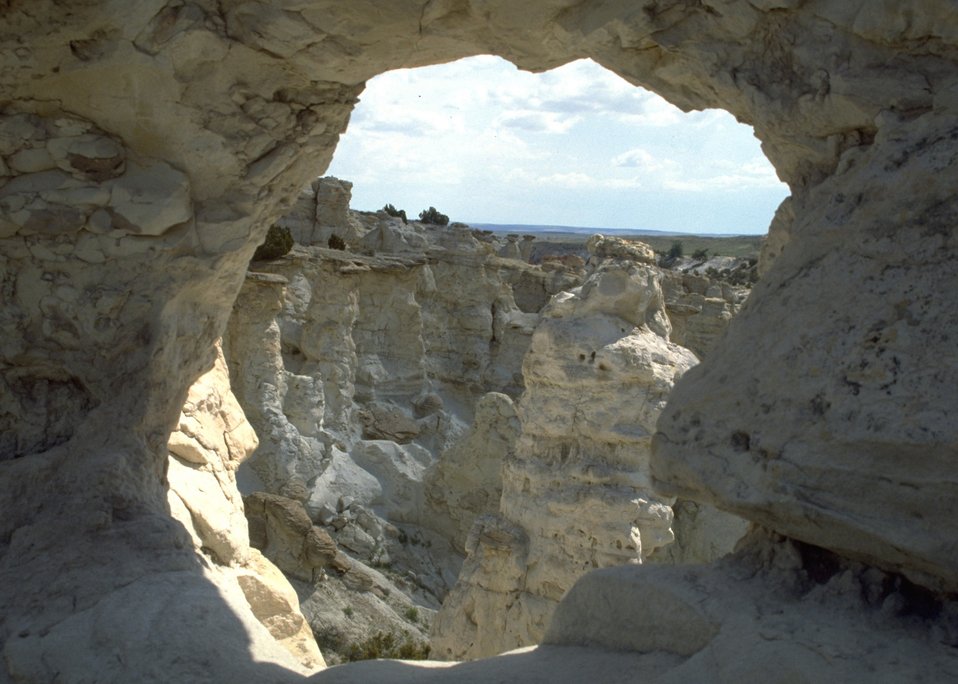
Scenic rock site.